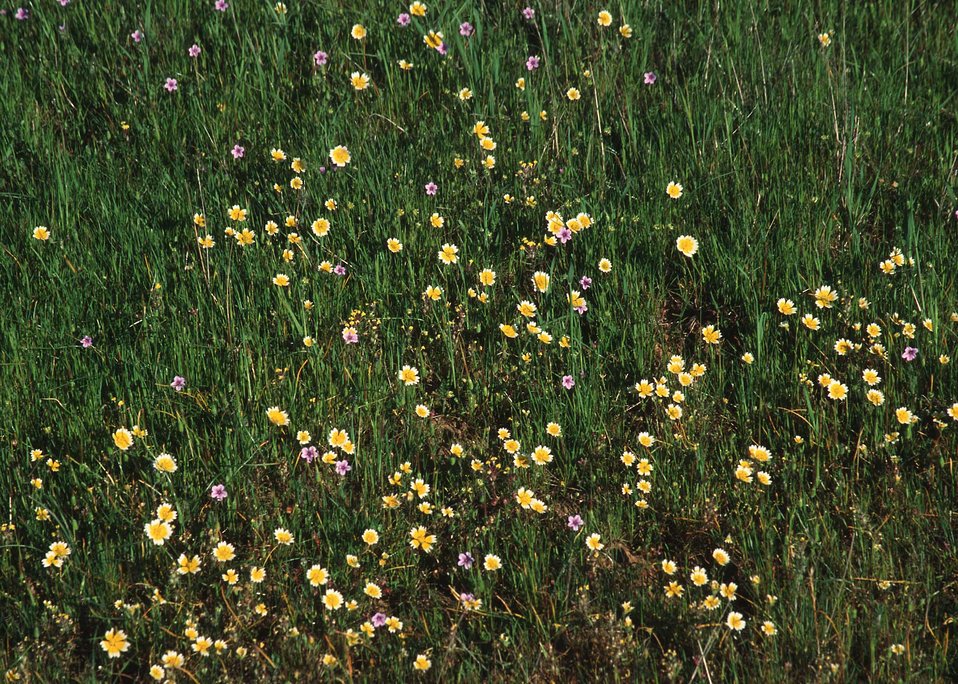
Vernal pool flower.